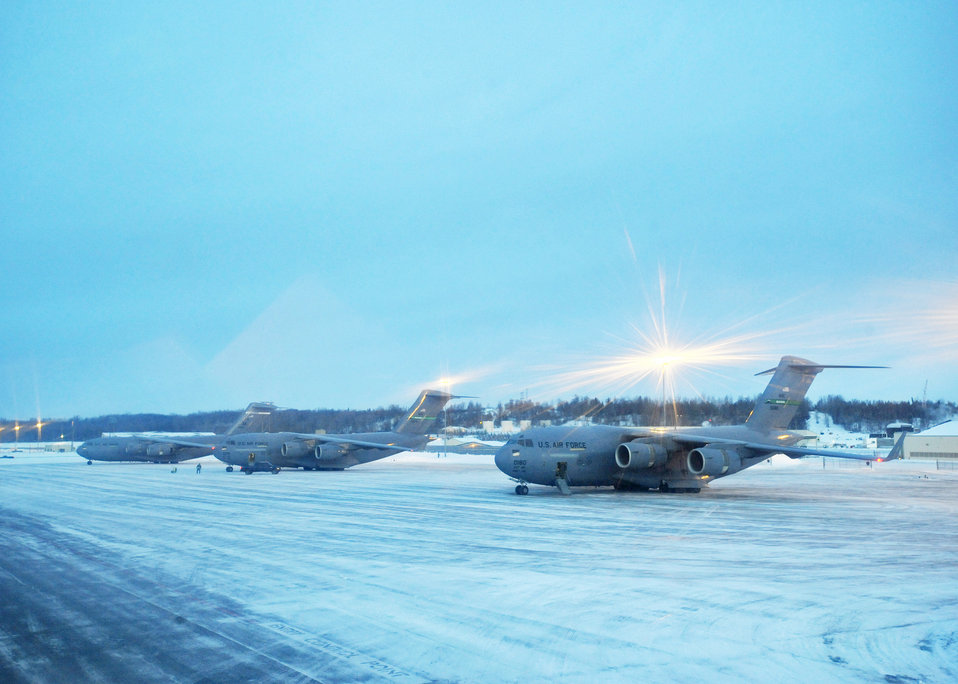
C-17s participate in Pacific Rendezvous

C-17 Globemaster IIIs sit on the ramp at Elmendorf Air Force Base, Alaska, waiting to take off Feb. 10, 2010. The aircraft assigned to Pacific Air Forces and Air Mobility Command were participating in an exercise that involved exploring capabilities in large formations and improving tactical awareness among aircrews.